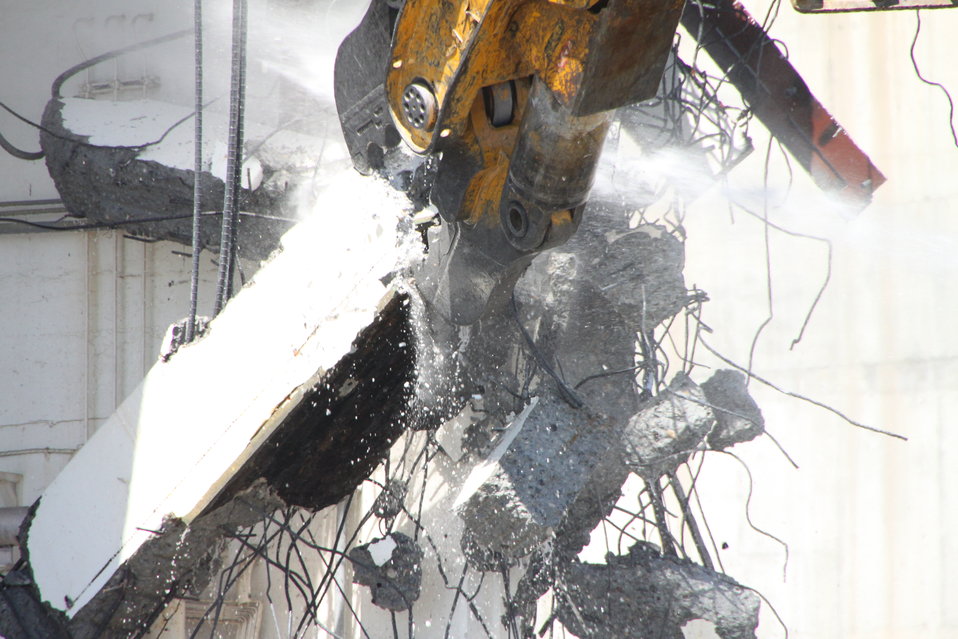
224-U closeup demolition

Workers demolish the 224-U facility, one of five ancillary facilities adjacent to Hanford’s U Plant.